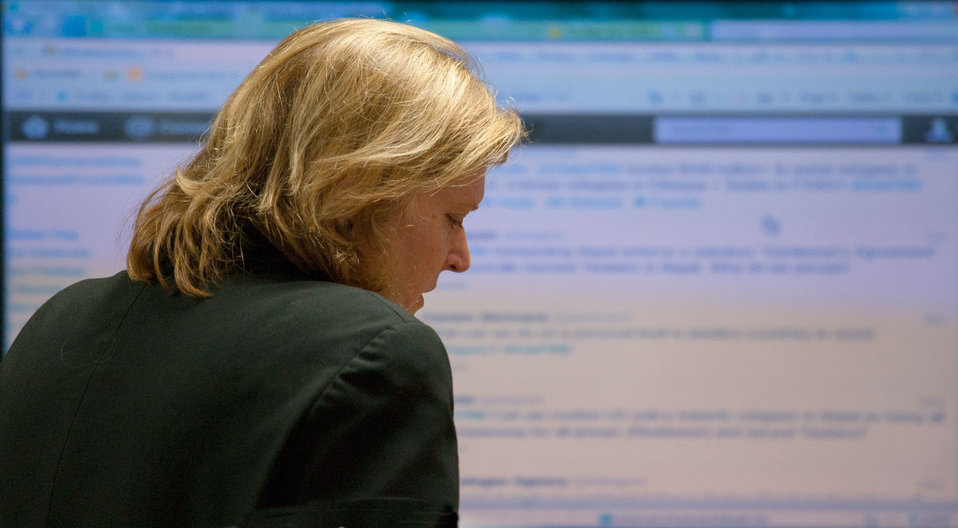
Assistant Secretary Richard Responds to Questions on Twitter

Assistant Secretary of State for Population, Refugees, and Migration Anne Richard responds to questions submitted on Twitter to @StateDept on World Refugee Day at the U.S. Department of State in Washington, D.C., June 20, 2012.